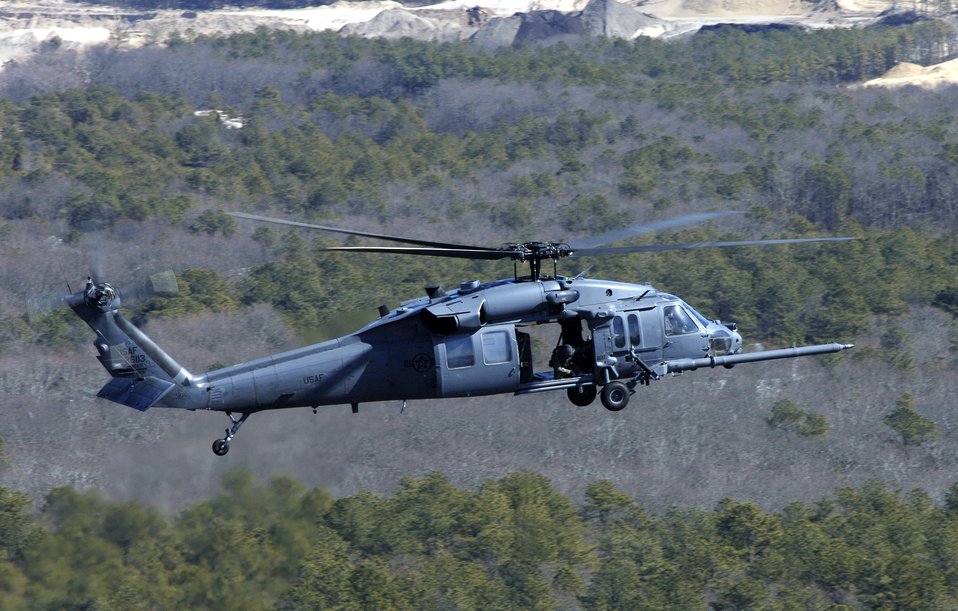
Guard wing makes mark on history

A crew from the New York Air National Guard's 101st Rescue Squadron flies a training mission near Francis E. Gabreski Field, N.Y.